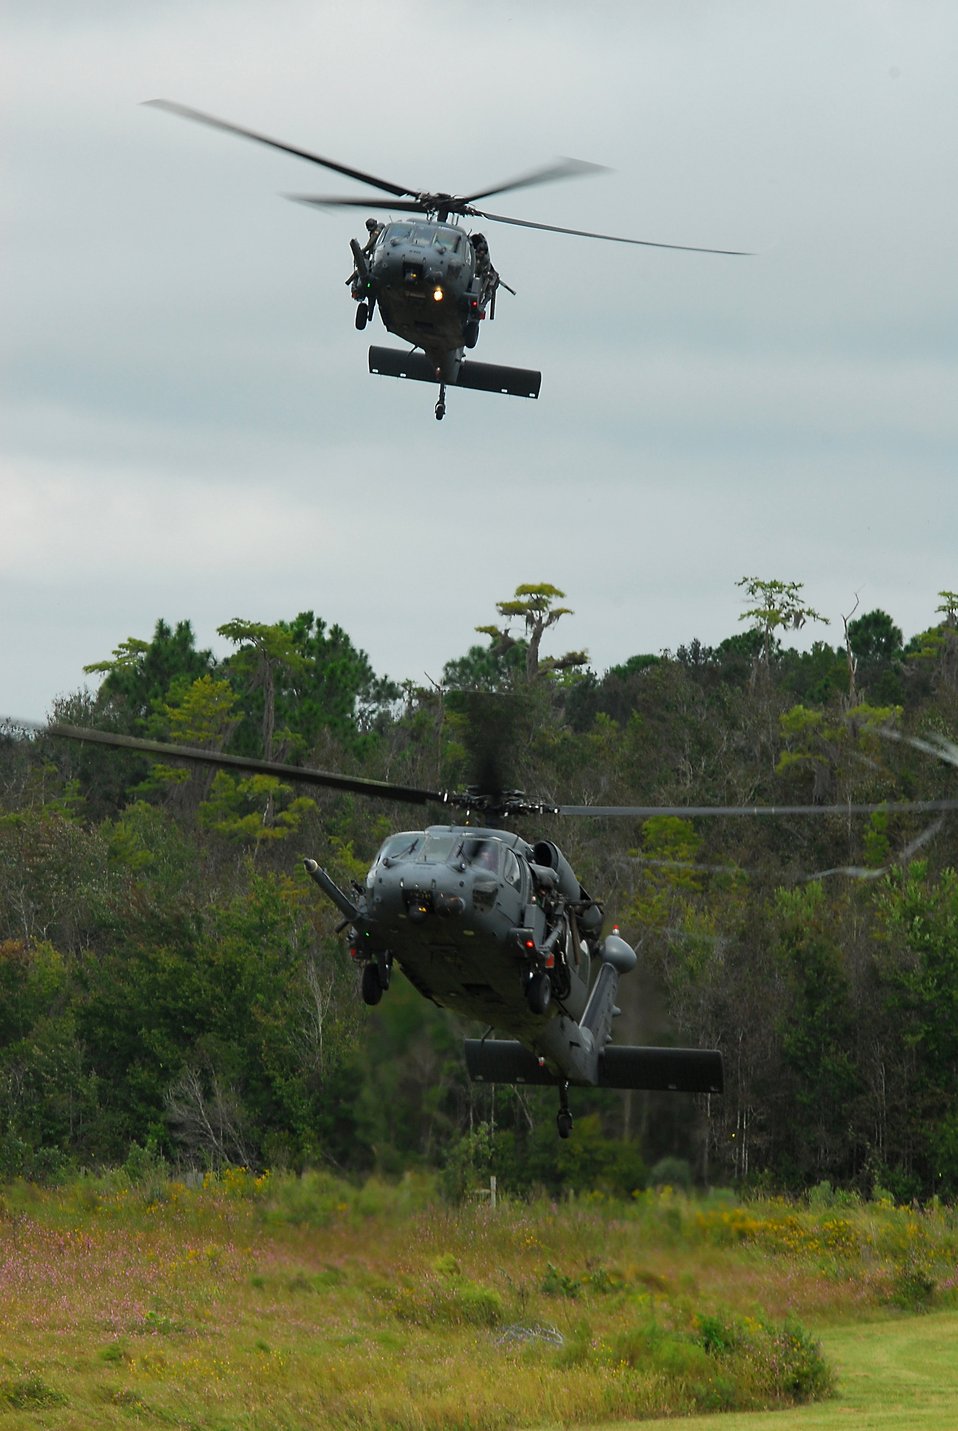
Combat search and rescue training

Two HH-60G Pave Hawks from the 41st Rescue Squadron approach a landing zone during a combat search and rescue demonstration at Moody Air Force Base, Ga., Oct. 4. The primary role of the HH-60G is to conduct day or night CSAR operations into hostile environments to recover downed aircrew or other isolated personnel during war.